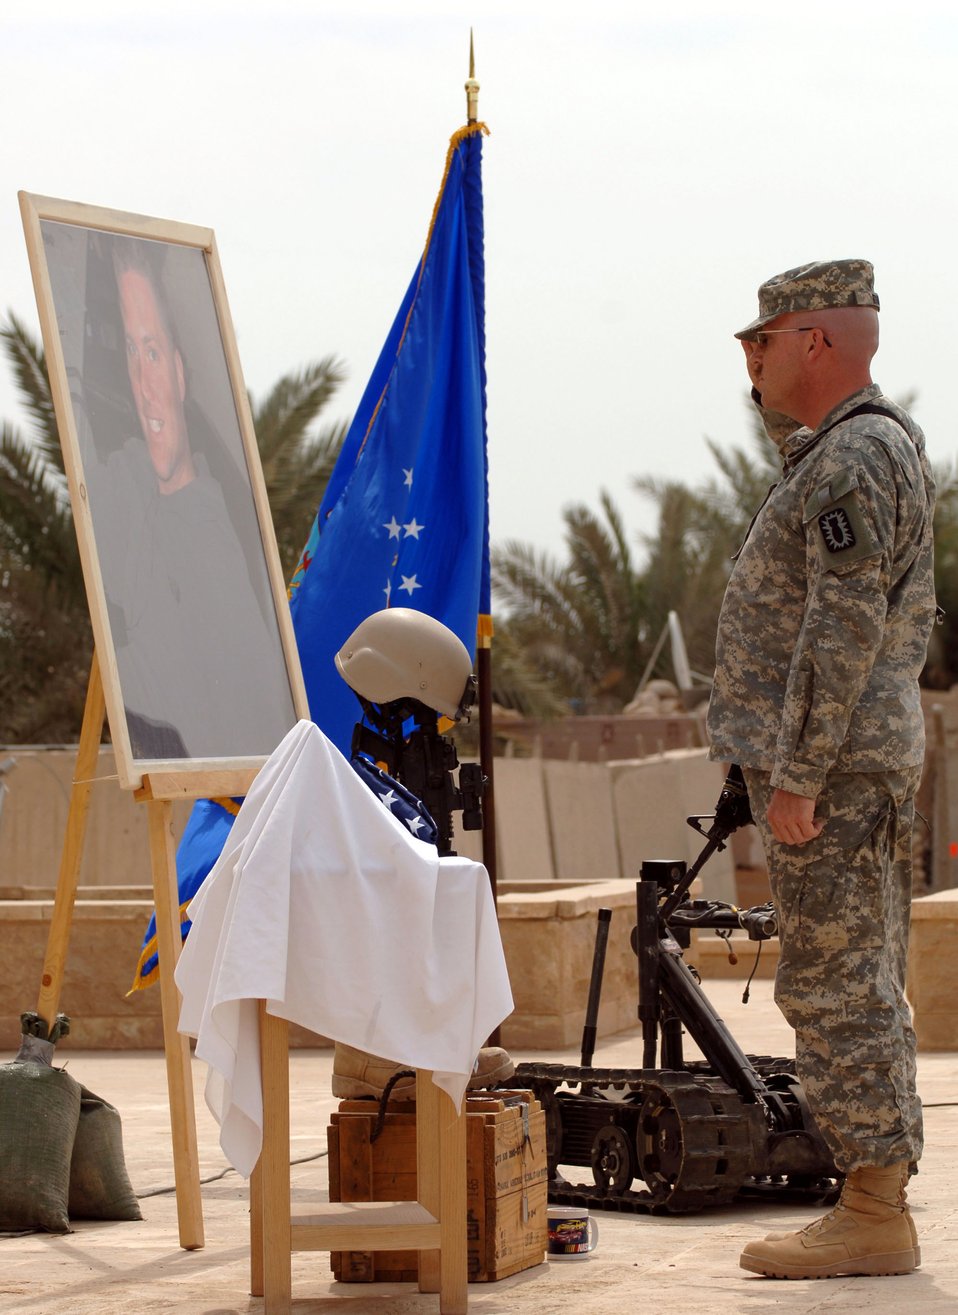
Memorial held for Airman killed in Operation Iraqi Freedom

A Soldier renders a final salute in honor of Tech. Sgt. Walter Moss at a memorial service on Saturday, April 1, 2006, at Sather Air Base, Iraq. Sergeant Moss, a 447th Expeditionary Civil Engineer Squadron explosive ordnance disposal flight technician, was killed in an explosion while performing safing operations near Baghdad March 29. He was the first Airman from Sather AB to be killed in action during Operation Iraqi Freedom.